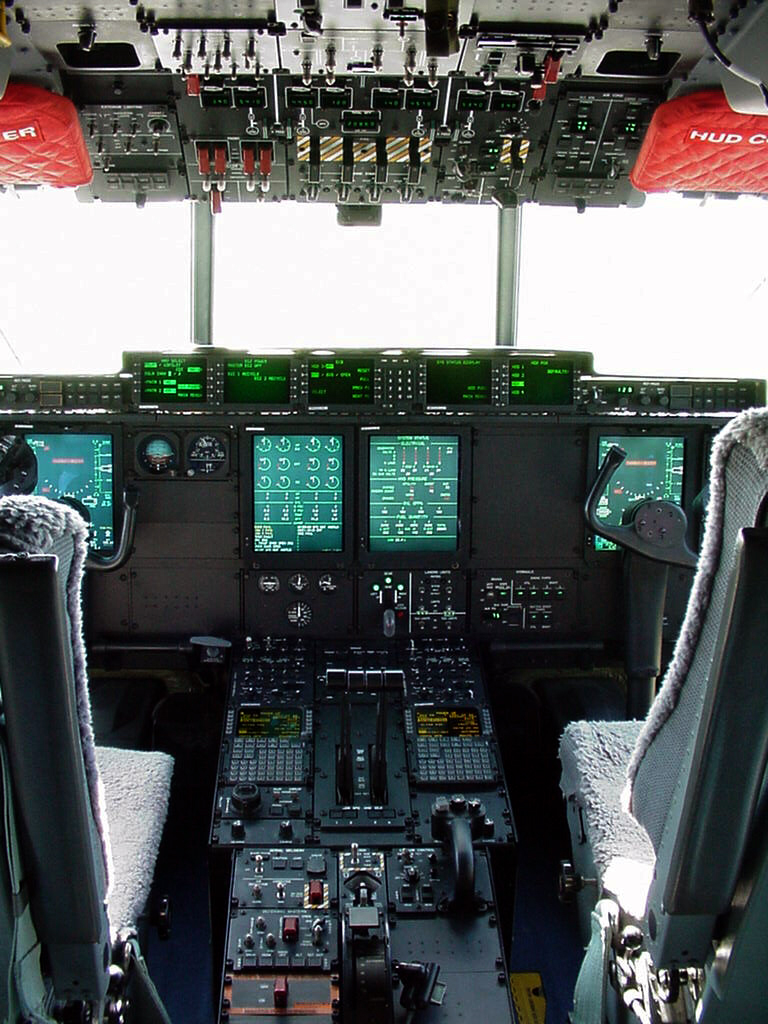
Hurricane Hunters fly first operation WC-130J mission

FILE PHOTO -- The WC-130J Hercules aircraft features a glass cockpit packed with the latest in computer assisted flight and navigational controls. These systems enhance the situational awareness of crews and allow them to focus on their in-flight tasks.